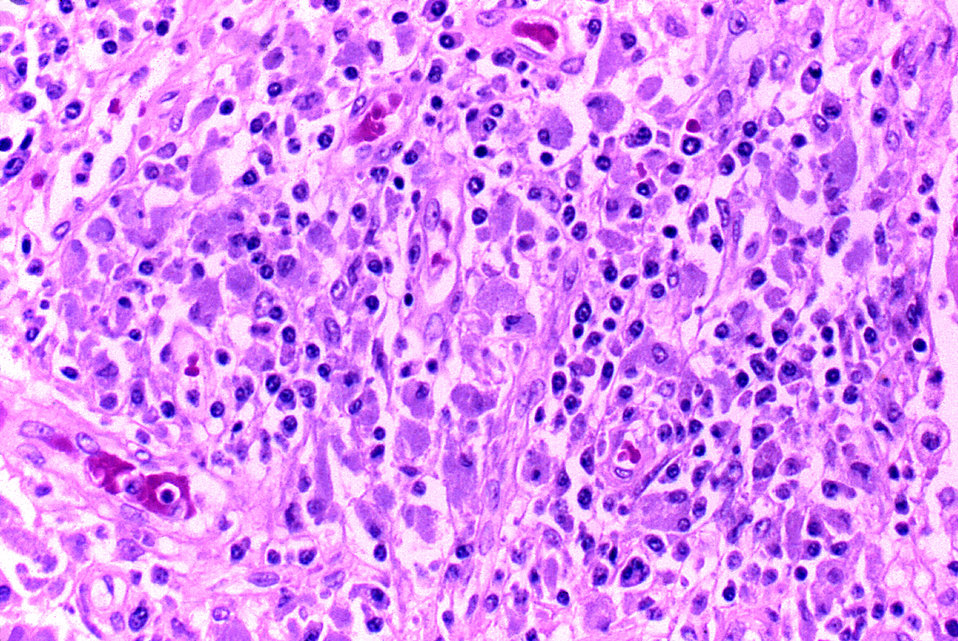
Mycobacterium avium-intracellulare infection of lymph node in patient with AIDS.